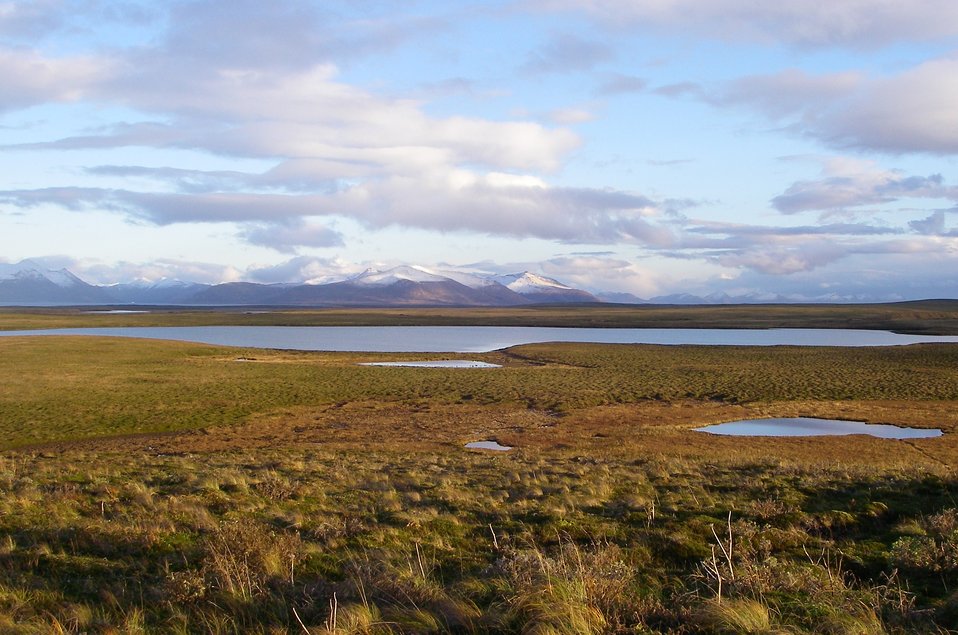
Fall tundra

Izembek National Wildlife Refuge